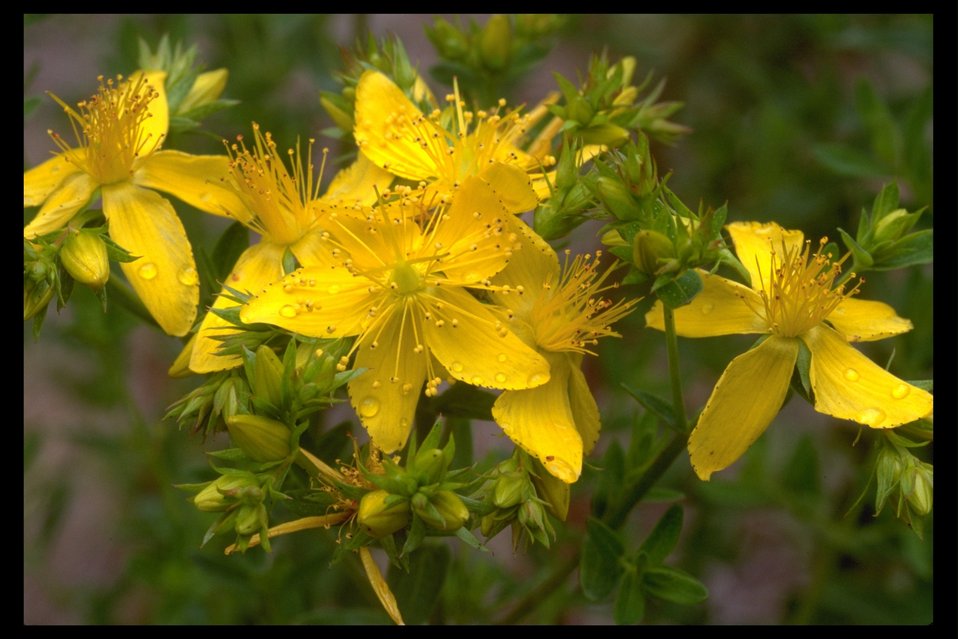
Close up of the blossom on St. John's Wart, also called Klamath Weed, (Hypericum perforatum) along Upper Trail Creek.